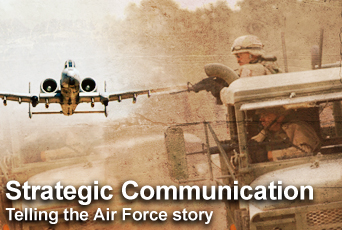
Stategic Communication -- moving to the next level

At a strategic communication summit held at the Pentagon Dec. 19, top Air Force leaders outlined an ambitious blueprint for Airmen to tell the nation about the service's contributions to the war on terrorism.